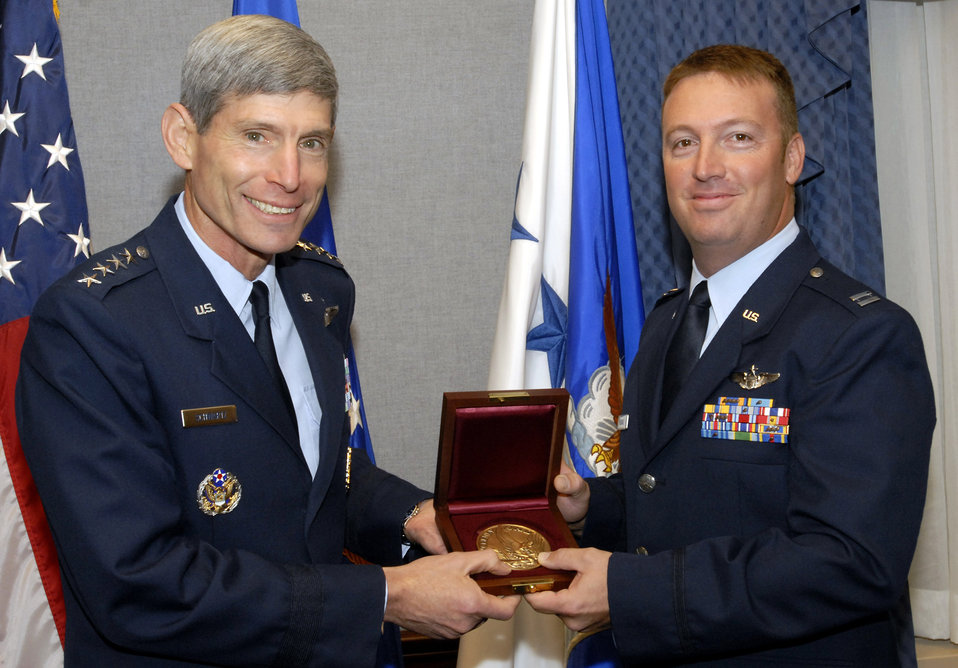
Gunship commander receives Cheney Award

Air Force Chief of Staff Gen. Norton Schwartz presents Capt. Chad Bubanas with the Cheney Award Oct. 6 at the Pentagon. Captain Bubanas received the award for his actions as the aircraft commander of an AC-130H Spectre gunship providing close-air support to troops on the ground in Afghanistan in May 2007. The Cheney Award is presented each year to aviators who demonstrate an act of valor, extreme fortitude or self-sacrifice in a humanitarian venture. Captain Bubanas, an Aurora, Colo., native, is assigned to the 18th Flight Test Squadron, Hurlburt Field, Fla.